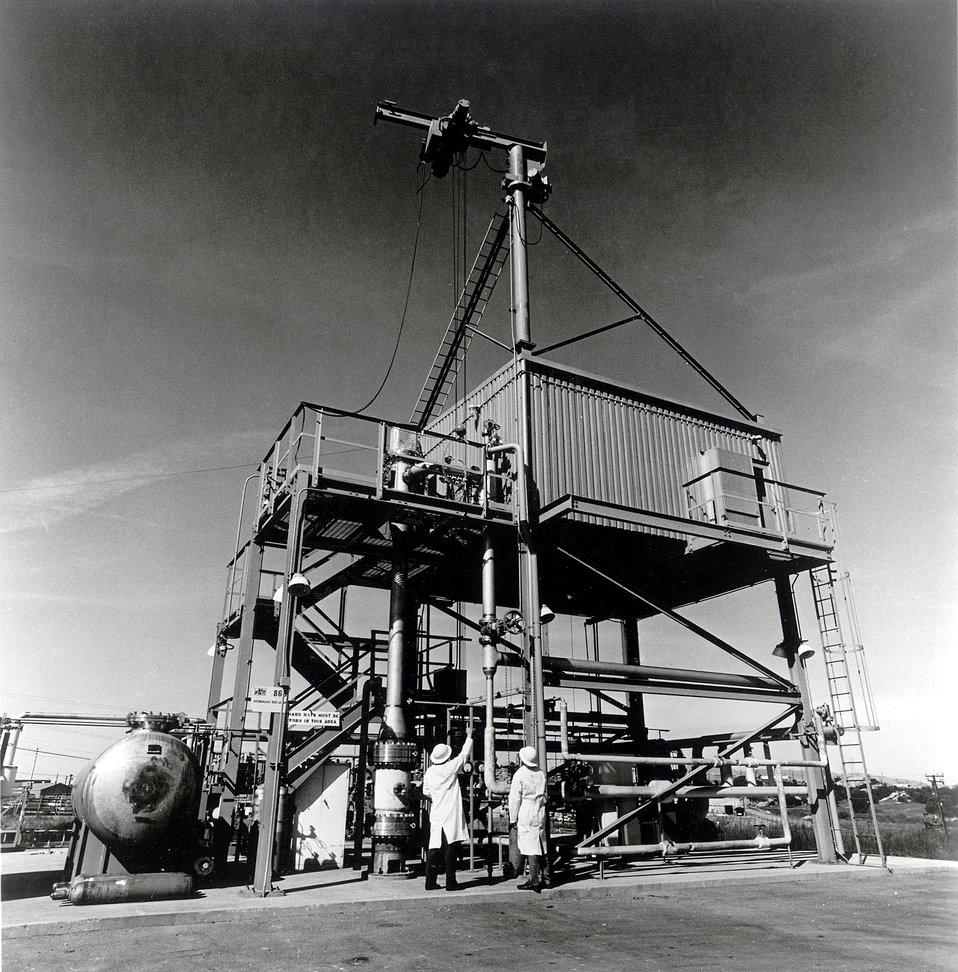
Large Hydraulic Test Facility at Atomics International's Santa Susana Nuclear Field Laboratory has two water loops for fuel assembly testing. Circa 1970.